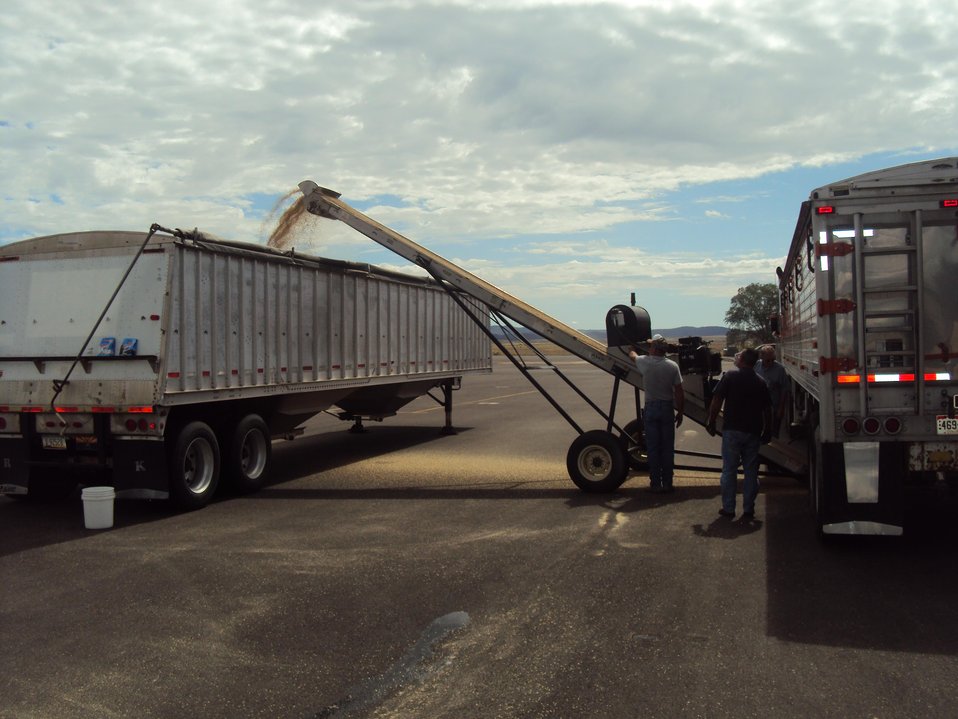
Seed for Air Tractors used for aerial seeding of severe burned areas of the Silver Fire is loaded into storage containers. The Silver Post Fire response has the Burned Area Emergency Response (BAER) team beginning operations to seed acres of high burn severity and to mulch additional acres. Seeding reduces effects to downstream life, property, and infrastructure by reducing erosion and runoff. Areas of high burn severity are to be seeded with a quick germinating, non-persistent annual cereal barley that would provide rapid ground cover. A small percentage of native perennial species would also be included to give the burned area a jump start in natural recovery, and provide for long-term ground cover. Mulch is the most effective treatment for controlling erosion and runoff, as it provides immediate ground cover. Mulch also assists in stabilizing soil in and around these areas. Aircraft for seeding operations will be based at the Gila National Forest Air Tanker Base.